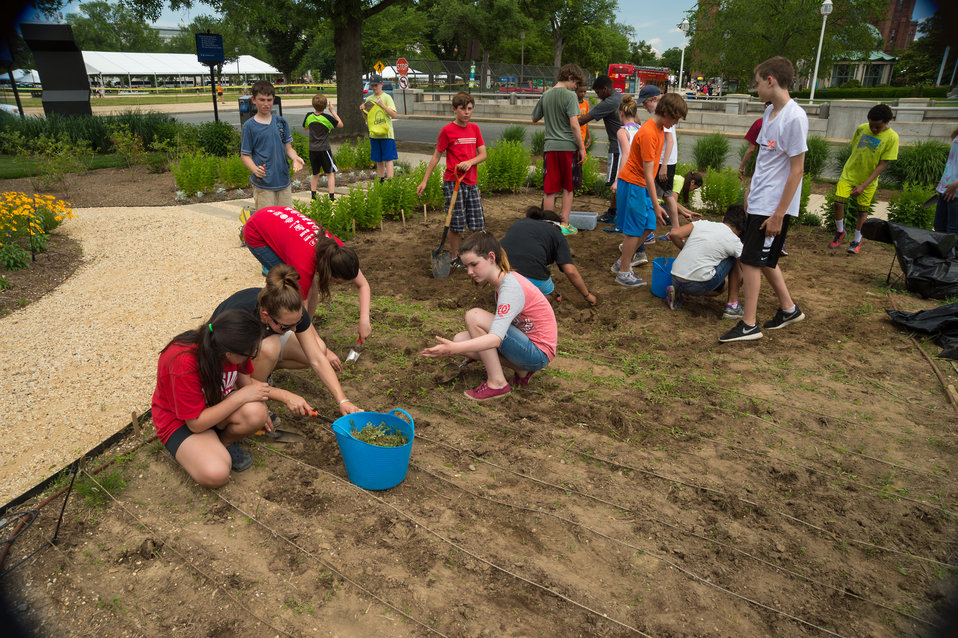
Alice Deal Middle School students and teachers sponsored by the United States Department of Agriculture (USDA) Faith Based and Neighborhood Partnerships volunteered in the People’s Garden at the USDA, on Wed. Jun. 4, 2014. The students have been studying hunger, food security, how to prevent hunger and organizations involved in solving hunger situations nationally and worldwide. A lot of what they learned is administered through the USDA.